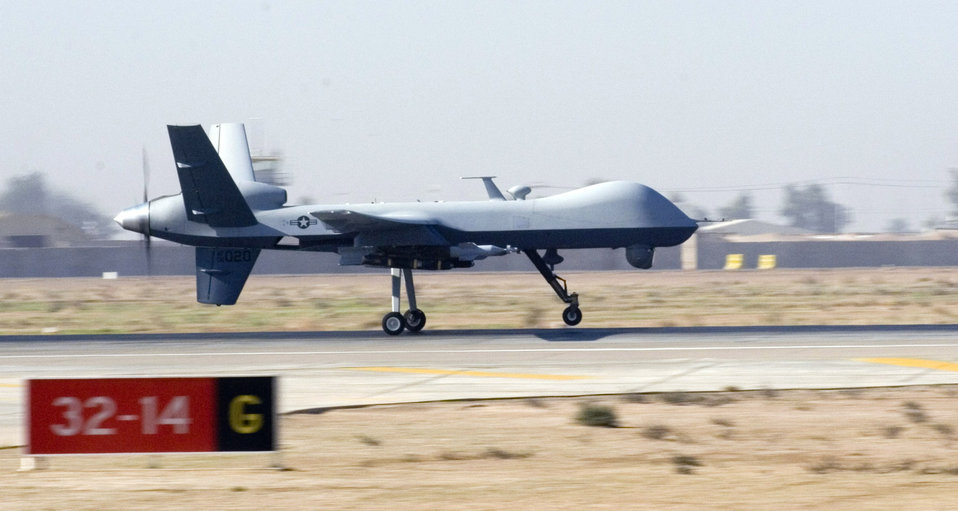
UAVs return from successful missions

An MQ-9 Reaper unmanned aerial vehicle lands at Joint Base Balad, Iraq, Nov. 10. Reapers are remotely piloted and can linger over battlefields, providing persistent strike capabilities to ground force commanders. This Reaper is deployed to the 46th Expeditionary Reconnaissance and Attack Squadron from Creech Air Force Base, Nev.